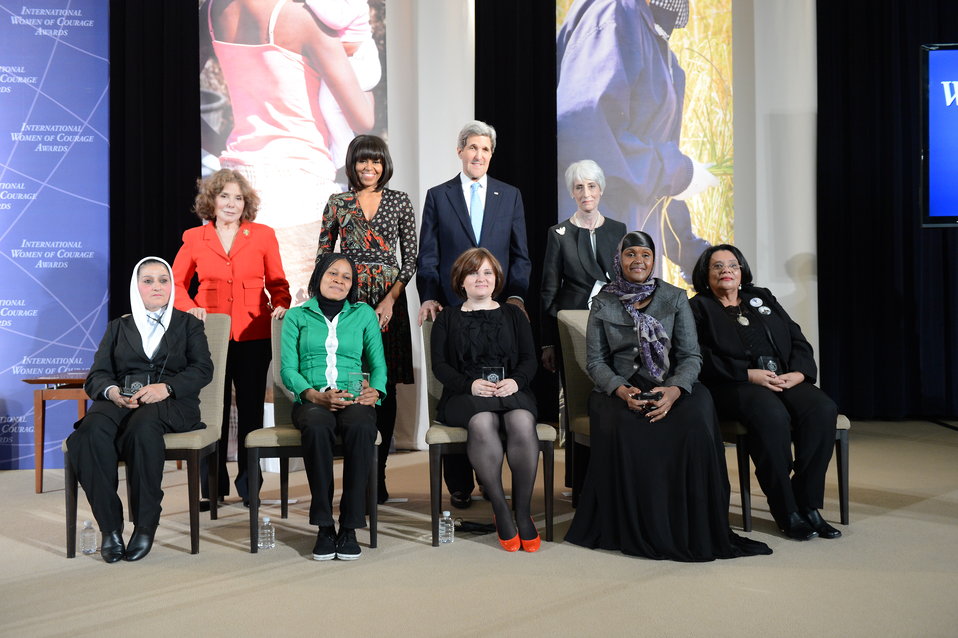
Secretary Kerry, First Lady Michelle Obama, Under Secretary Sherman, Mrs. Heinz Kerry pose with the 2013 International Women of Courage Award Winners

Standing from left to right, Mrs. Teresa Heinz Kerry, First Lady Michelle Obama, U.S. Secretary of State John Kerry, and U.S. Under Secretary of State for Political Affairs Wendy Sherman pose for a photo with the 2013 International Women of Courage Award Winners, including left to right, Second Lieutenant Malalai Bahaduri of Afghanistan, Dr. Josephine Obiajulu Odumakin of Nigeria, Elena Milashina of Russia, Fartuun Adan of Somalia, and Julieta Castellanos of Honduras, at the U.S. Department of State in Washington, D.C., on March 8, 2013.